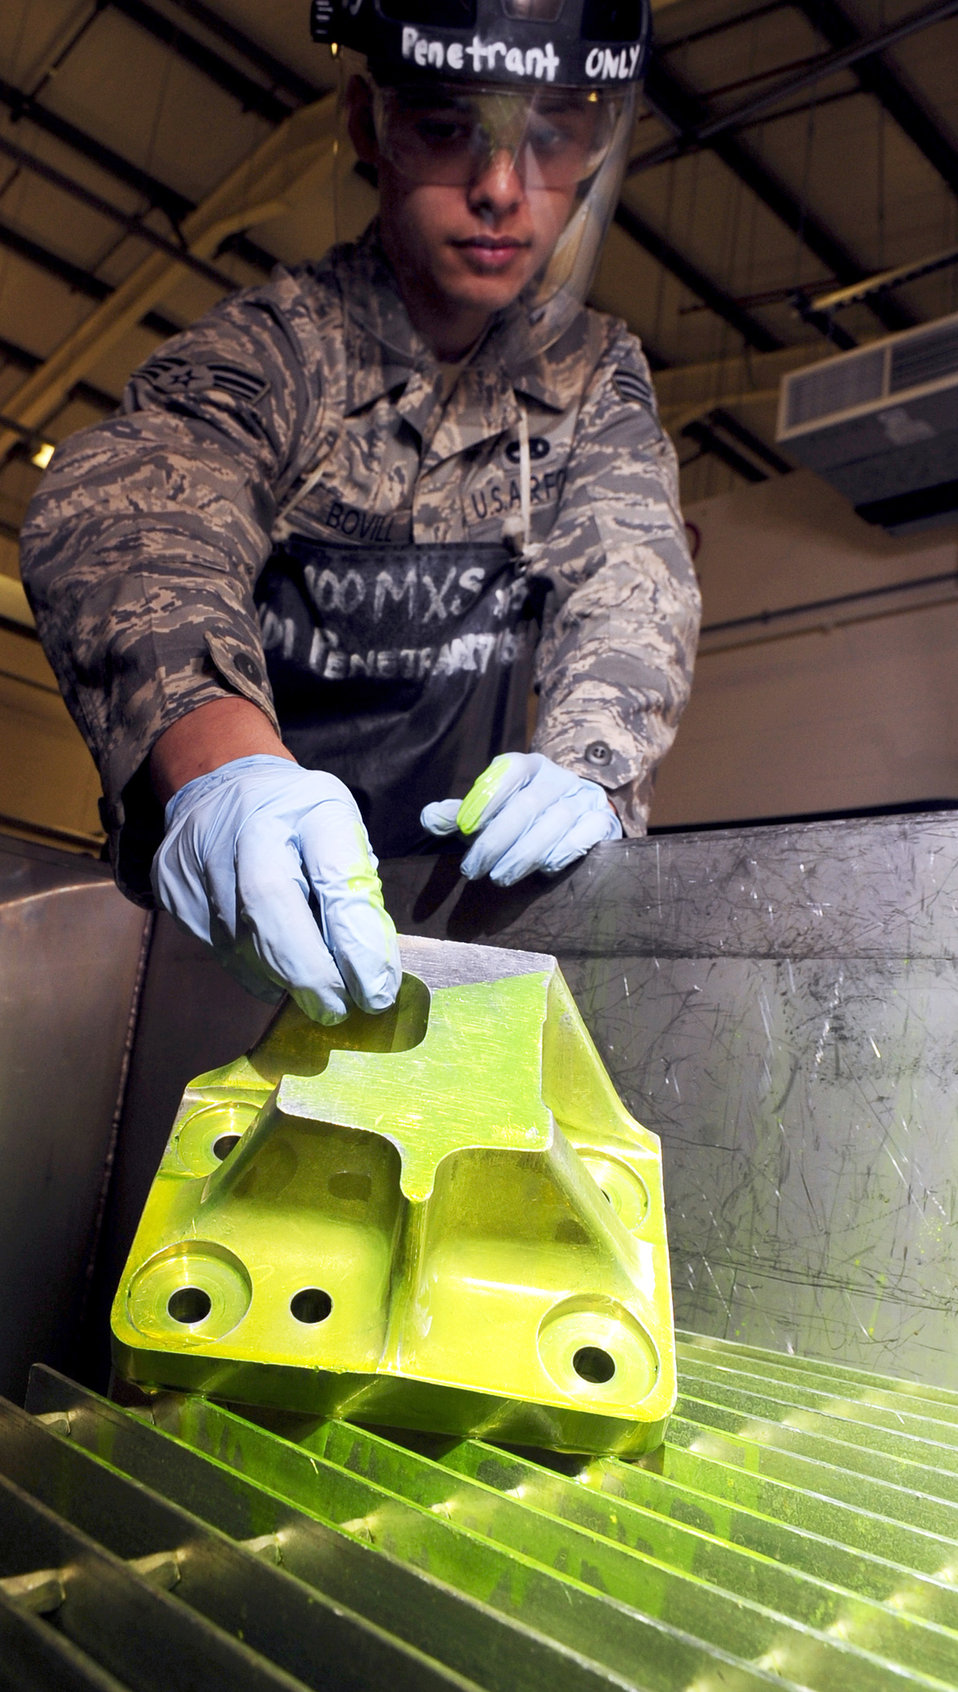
Keeping a watchful eye

Senior Airman Christopher Bovill lets excess fluorescent liquid penetrant drain from a KC-135 Stratotanker jack-mount during an inspection here July 28, 2011 at Royal Air Force Mildenhall, England. Suspected damaged pieces of equipment are placed in the penetrant allowing it to be absorbed into any cracks. Bovill is a non-destructive inspection journeyman with the 100th Maintenance Squadron.